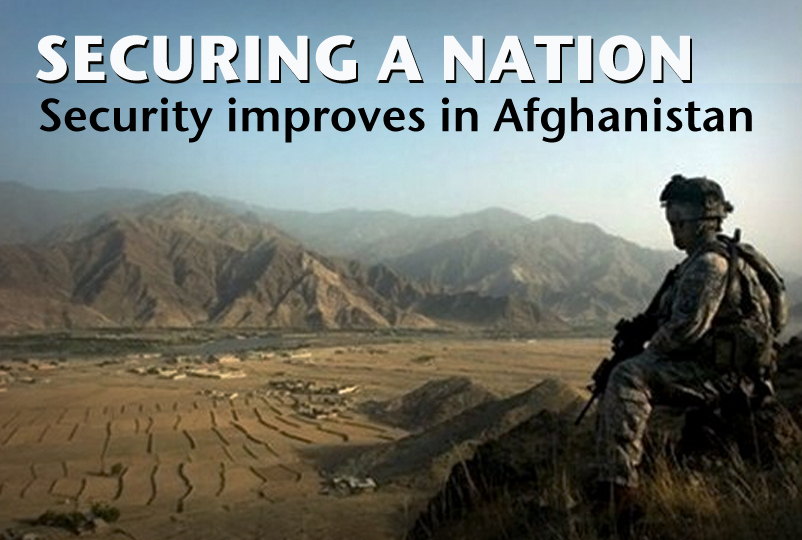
Afghan security